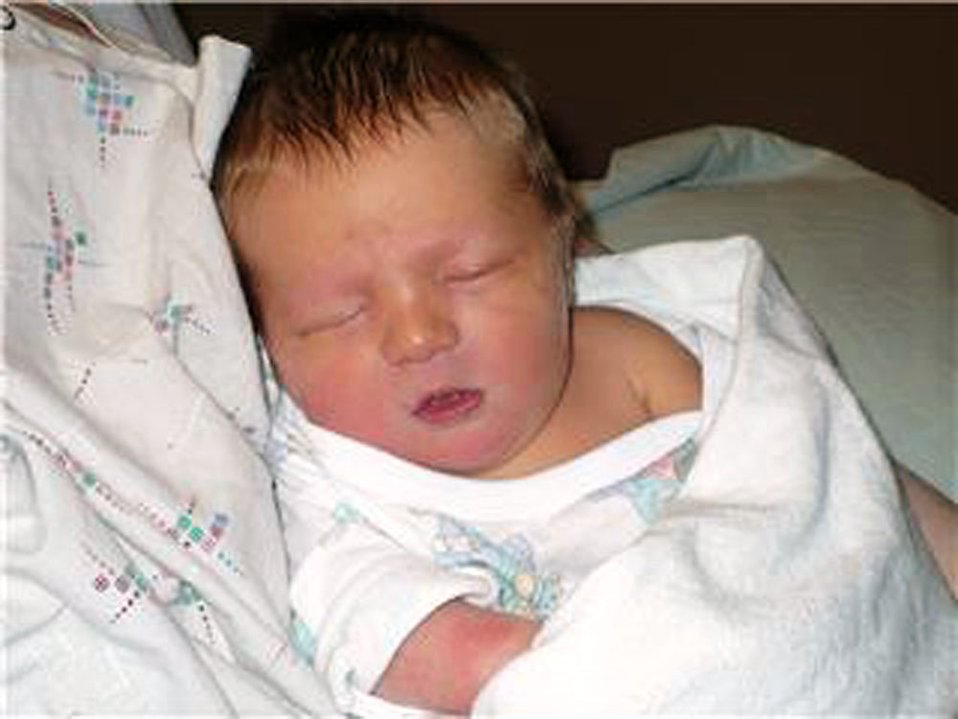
Deployed dad watches son's birth via Web cam

Rylan Todd was born weighing 8 pounds and 5 ounces March 25 at 11:01 p.m. to Staff Sgt. Nicholas Todd and Jamie Todd at a hospital near Ellsworth Air Force Base, S.D. Sergeant Todd, who is deployed to a Southwest Asian air base, watched the birth via Web cam.